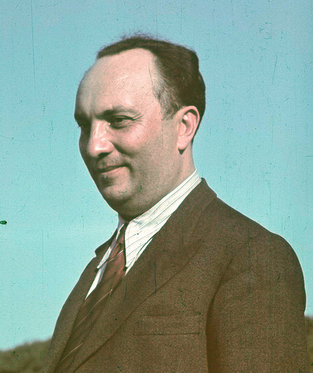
Română: dr. jur. Aurel Sava